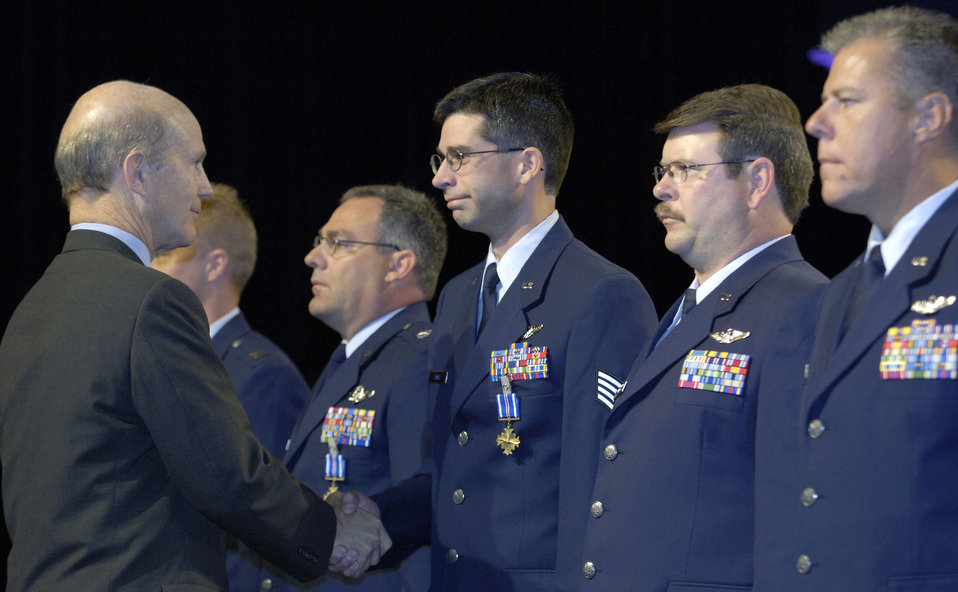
Air & Space Conference 2005

WASHINGTON -- Acting Secretary of the Air Force Pete Geren congratulates flight engineer Staff Sgt. Daniel Hayes after awarding him the Distinguished Flying Cross during the opening ceremonies of the 2005 Air and Space Conference and Technology Exposition here Sept. 12. Staff Sgt. Hayes and his fellow crewmembers earned the cross for distinguished service during an Operation Iraqi Freedom counterinsurgency sustainment mission Oct. 26, 2004.